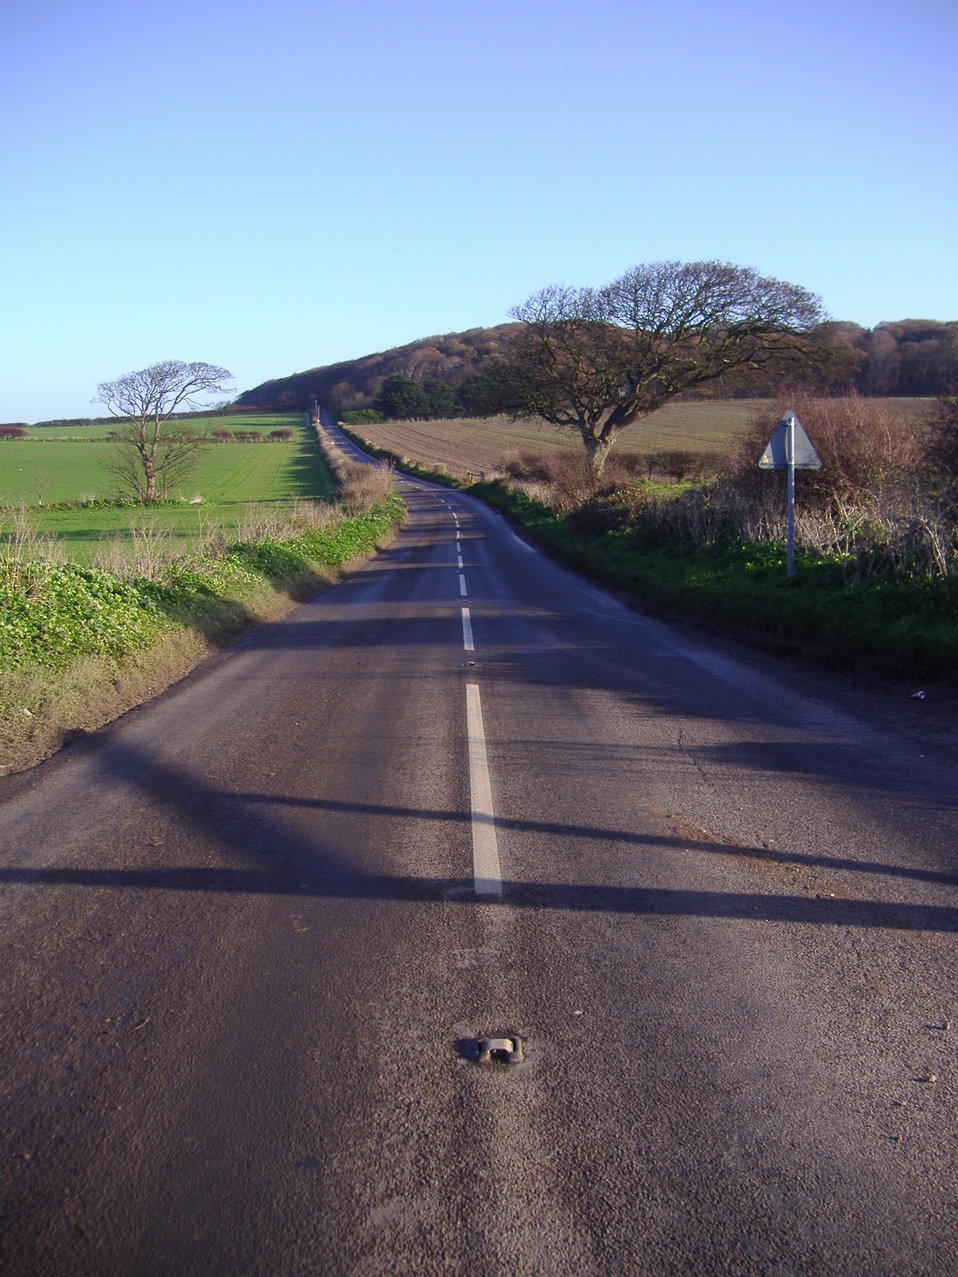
A Digital Photograph of the A 149 near Weybourne By M Hobbs